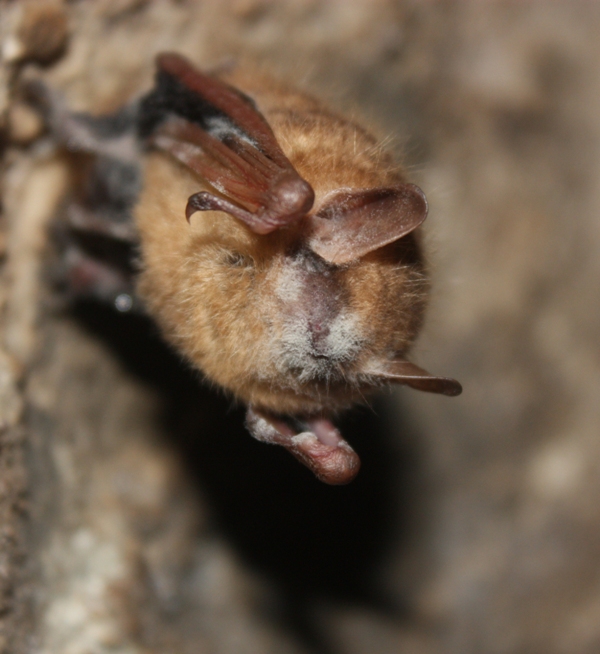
tri-colored bat with WNS